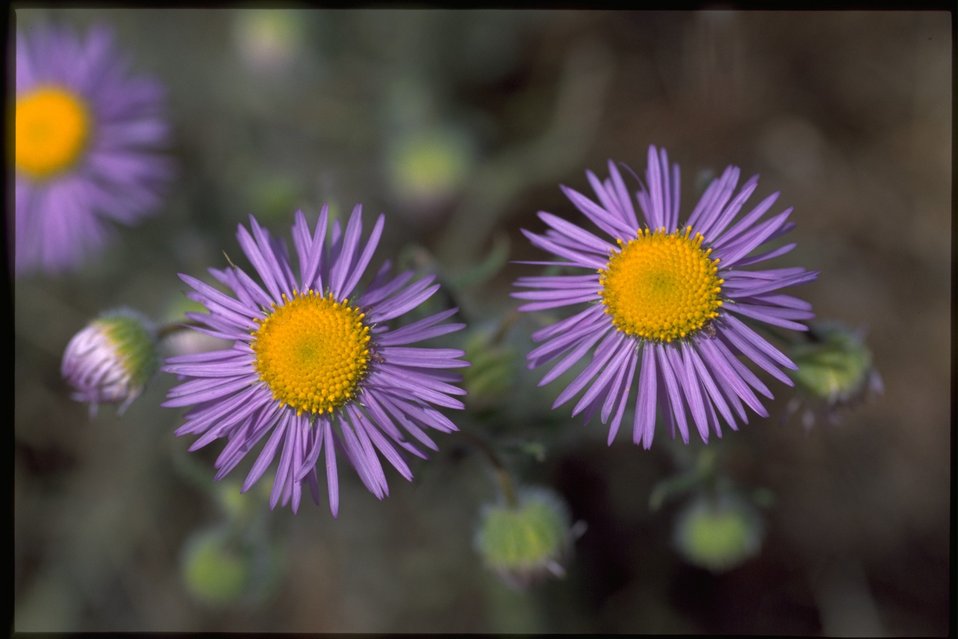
Closeup shot of Asteraceae.